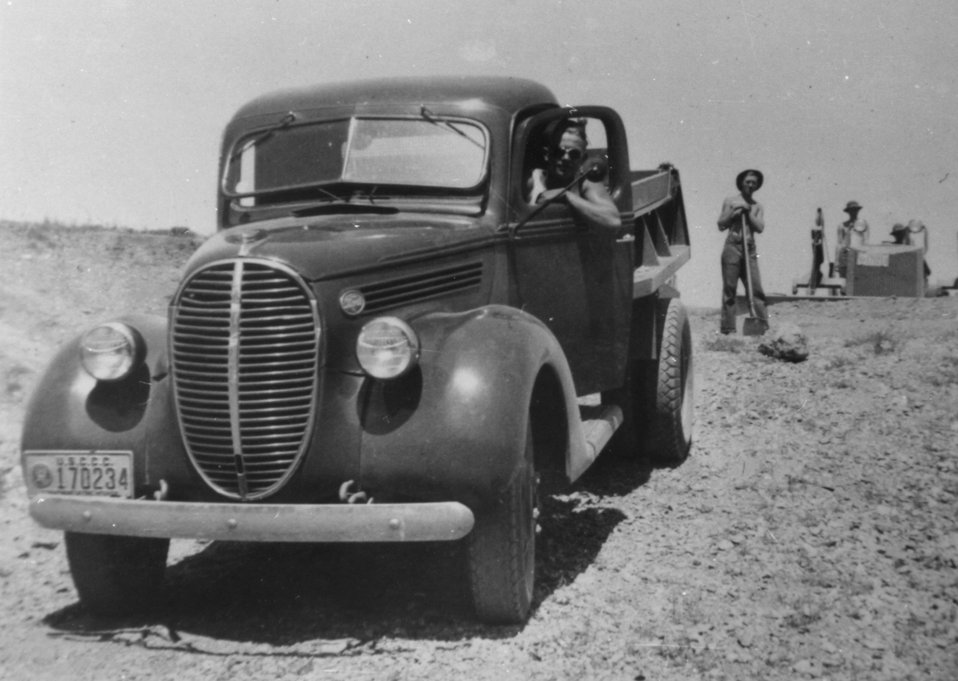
CCC crew from Gap Ranch contructing road. Note crawler tractor in background. circa 1940 Photograph courtesy Joe Urbanek